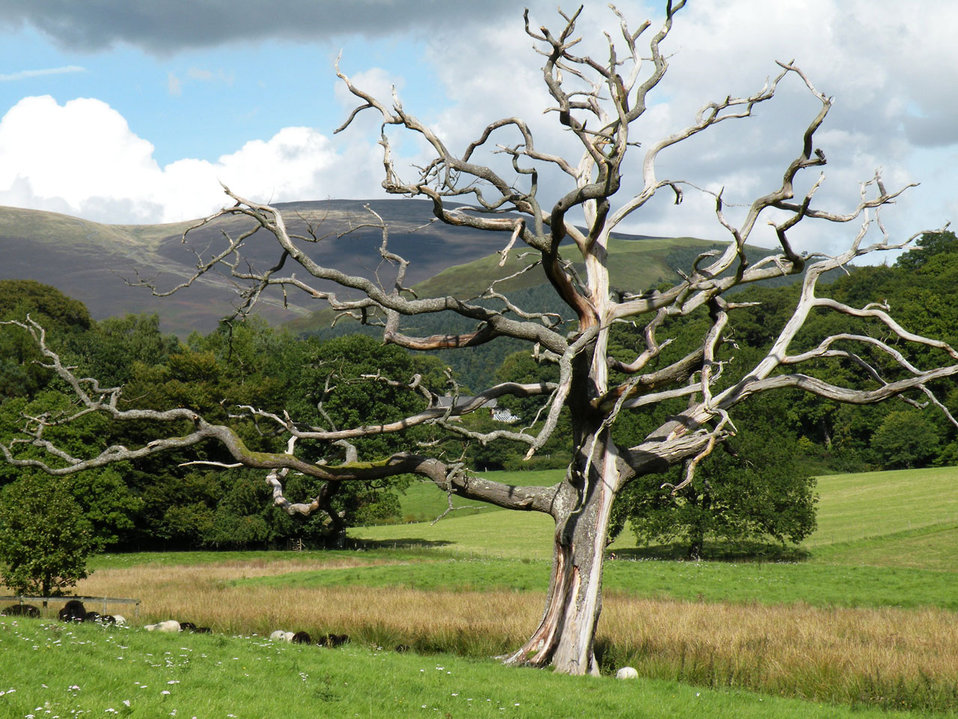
Lightning tree

Dead tree struck by lightning.